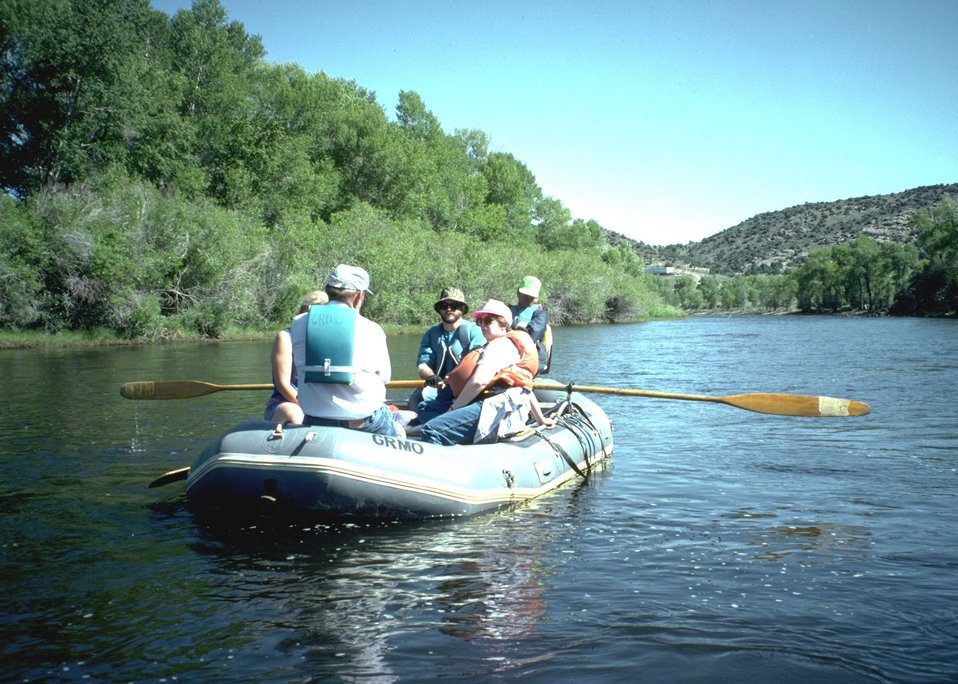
Rafting down an unknown river.